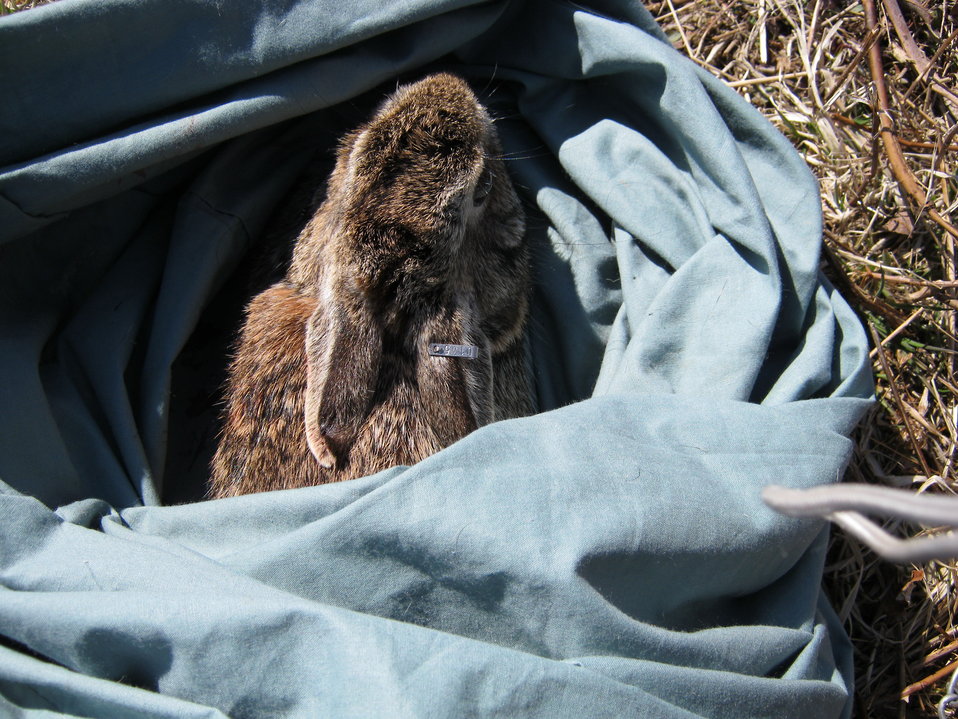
Finding New England cottontails

A cottontail that has been trapped and will be quickly processed and returned to its home. Its information will help us determine if the rare New England cottontail lives here and if so, help us protect it.